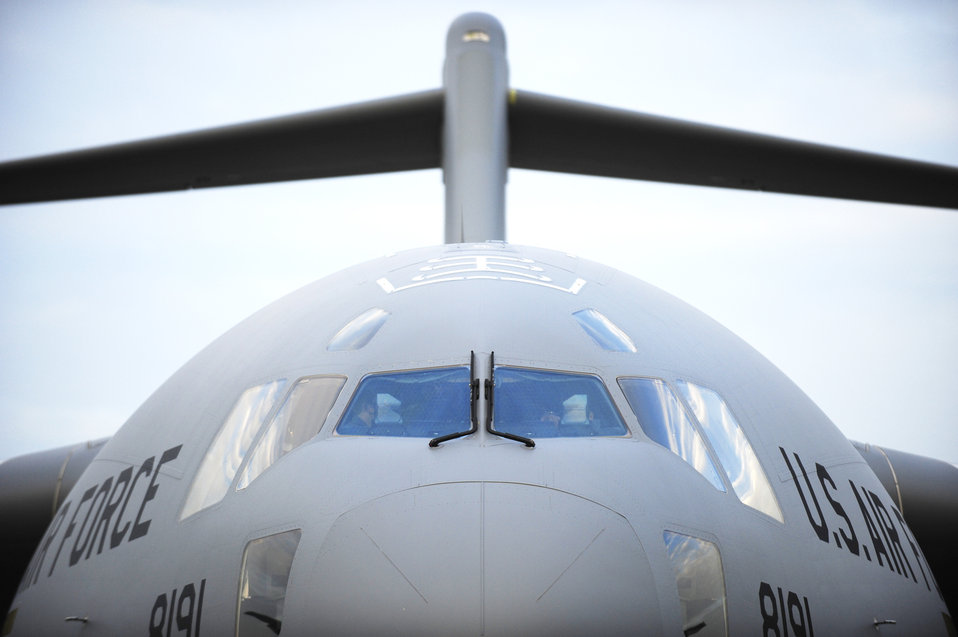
Haiti Relief Operations

A C-17 Globemaster III parked at Charleston Air Force Base, S.C., Jan.14, 2010, will be used by 437th Air Mobility Wing Airmen to particpate in a relief effort to Haiti in the aftermath of a devastating earthquake.